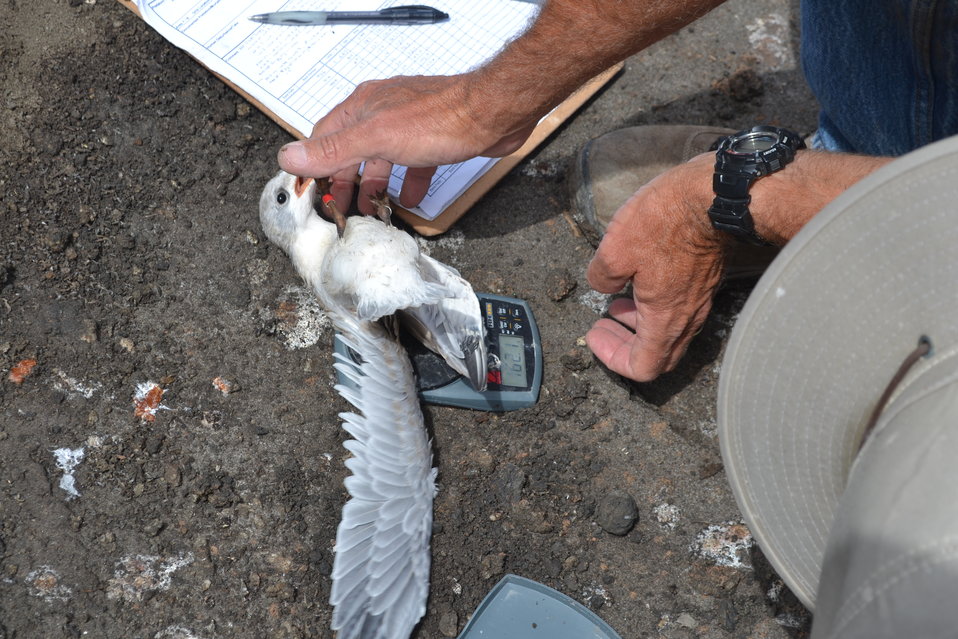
Gull-billed tern (Sterna nilotica) gets weighed

Biologists contracted by the FWS regularly collect data from the several species of terns on the refuge. Here, a gull-billed tern is getting weighed, will have its wings measured, and will be banded. Gull-billed terns have been a candidate species for listing, but recently have been taken off the list due to their successful comeback in recent years. They have been seen preying on other hatchling plovers and terns.